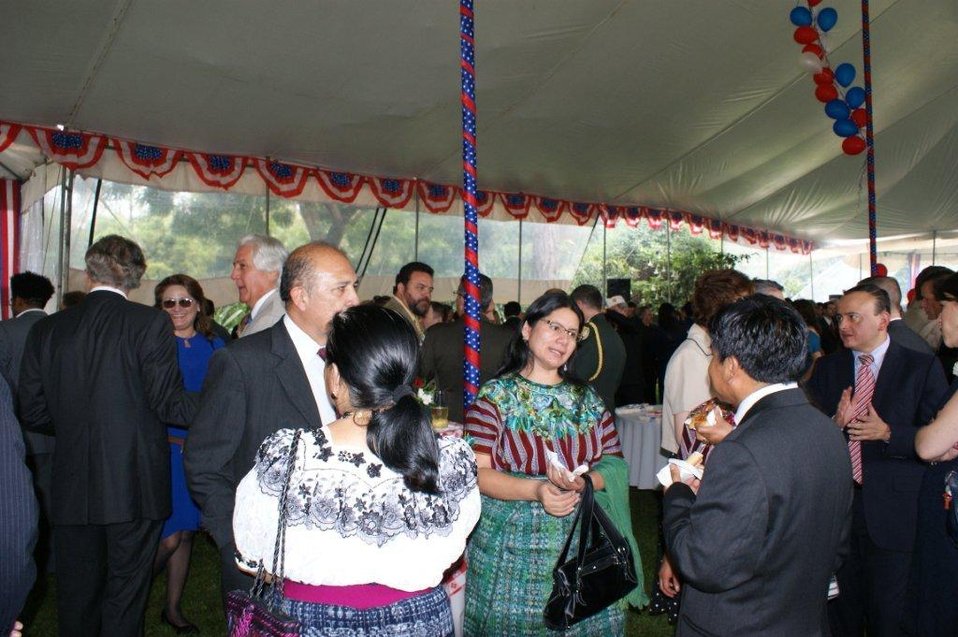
July 4th Celebration at U.S. Embassy in Guatemala

Guests socialize on the lawn before the U.S. Independence Day celebration at the Ambassador's Residence in Guatemala City, Guatemala, on July 2, 2010.